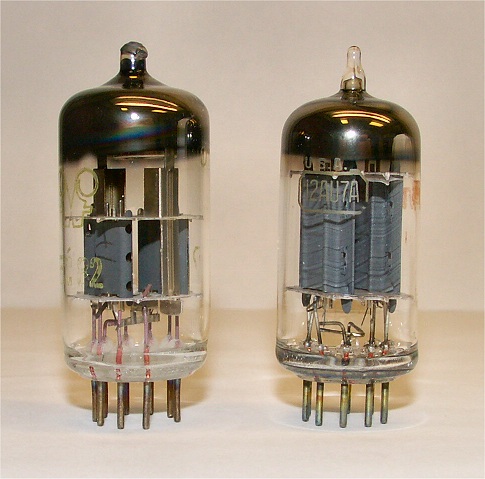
I created this image myself from tubes in my collection.